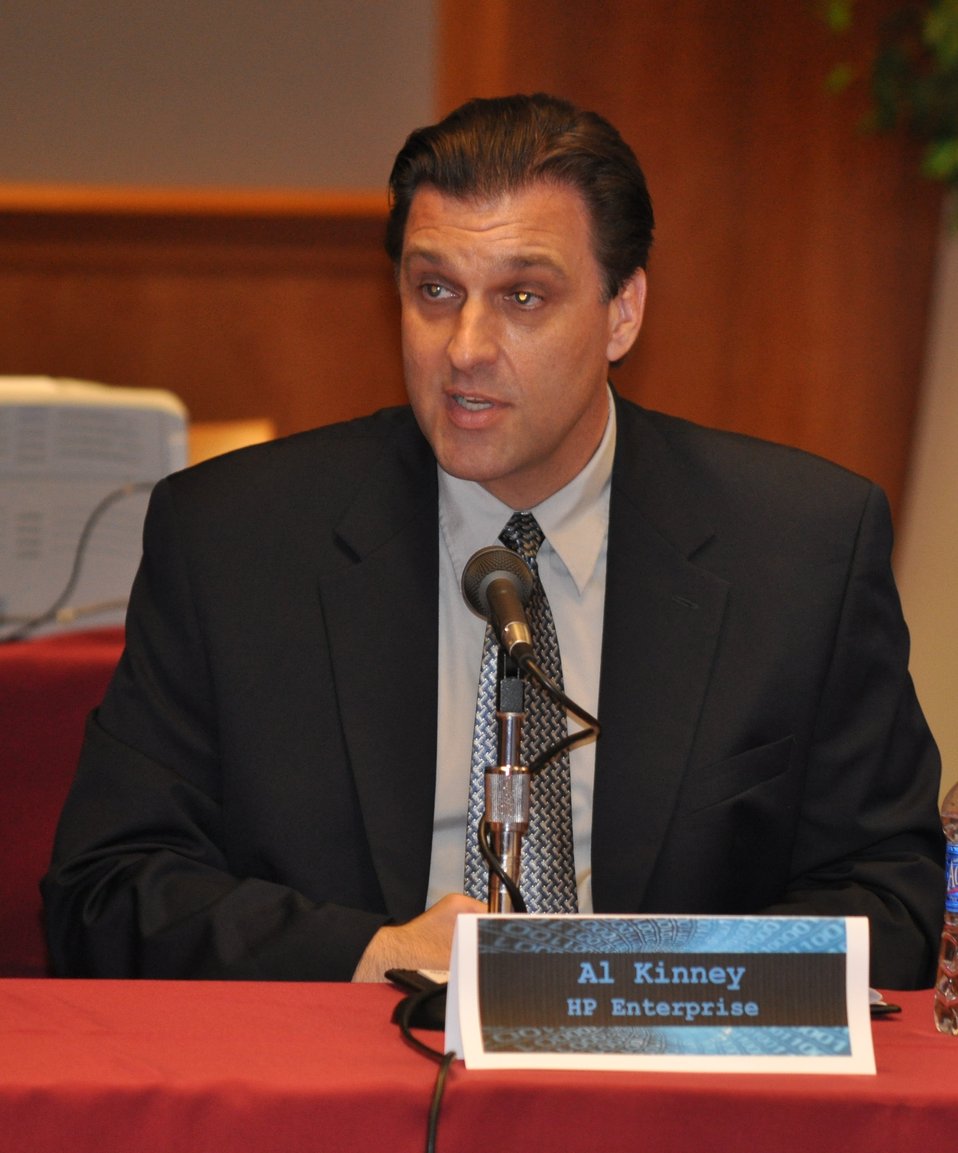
Cybersecurity 5-16

Cybersecurity for Small Business Roundtable; May 16, 2011